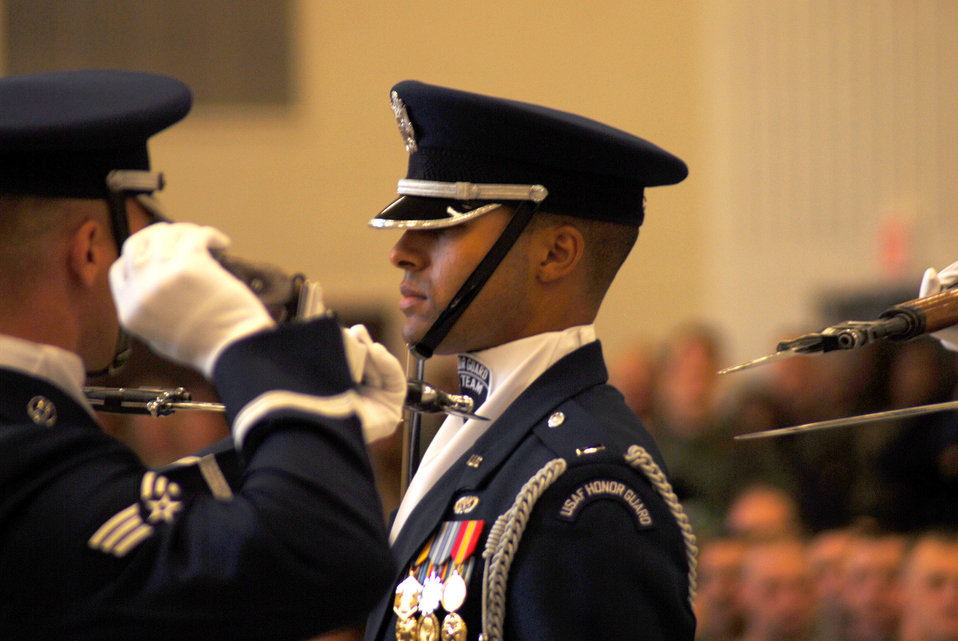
2007 Air Force Honor Guard

First Lt. Joshua Hawkins, Air Force Honor Guard Drill Team commander, stands at attention during a drill by members of the four-man drill team. The drill team unveiled their new performances for 2007 Nov. 21 at Bolling Air Force Base, D.C.